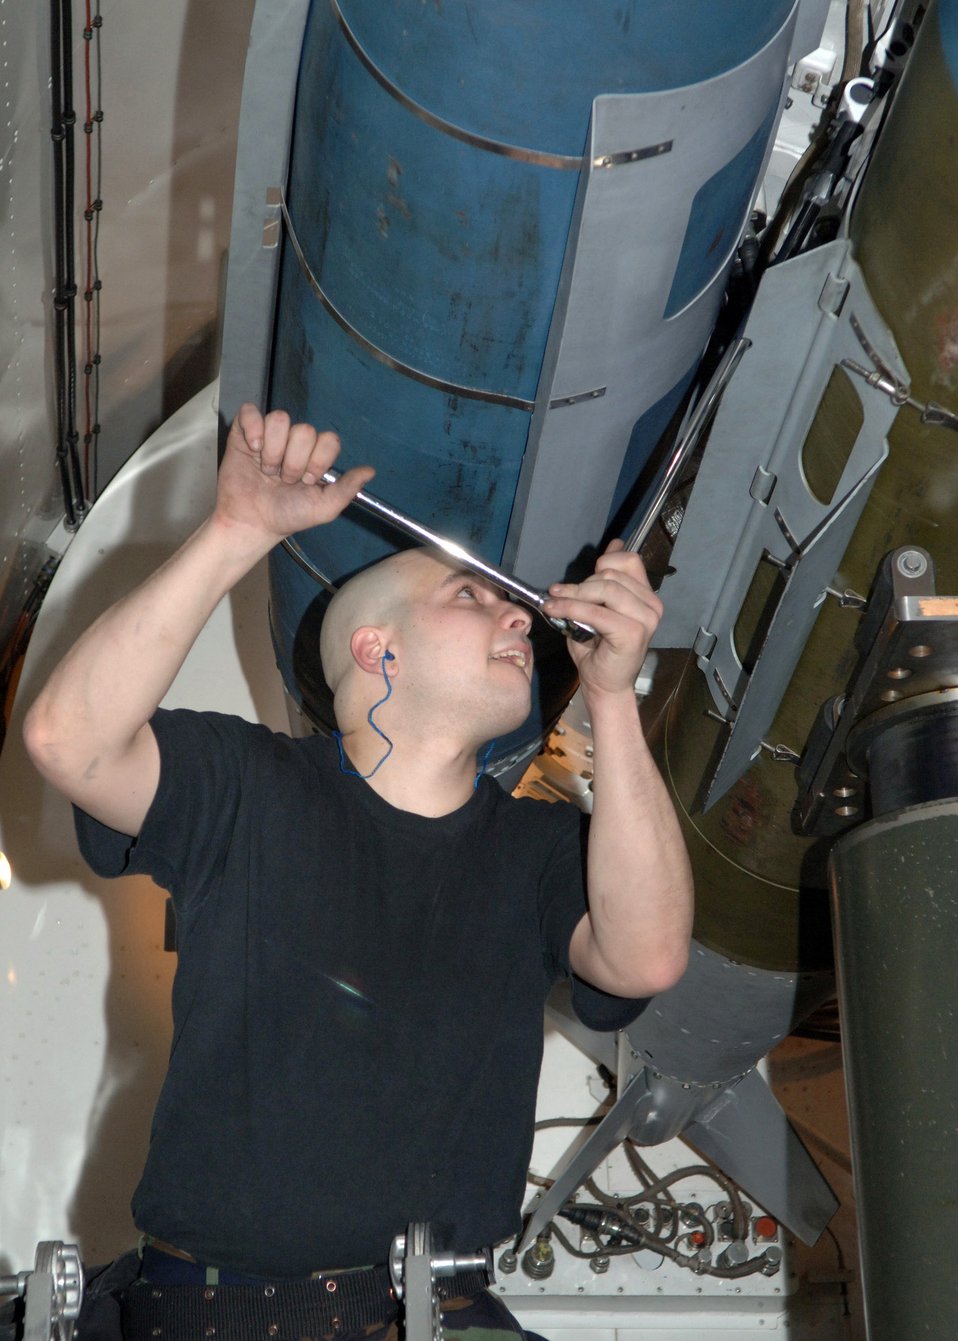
Weapons Load Crew Competition

Senior Airman Andrew Littleton loads a weapon during a crew competition at Ellsworth Air Force Base, S.D., on Friday, April 7, 2006. Each crew is rated on their time and efficiency when loading bombs onto the armament systems trainer. Airman Littleton is an aircraft armament systems specialist with the 34th Aircraft Maintenance Unit.